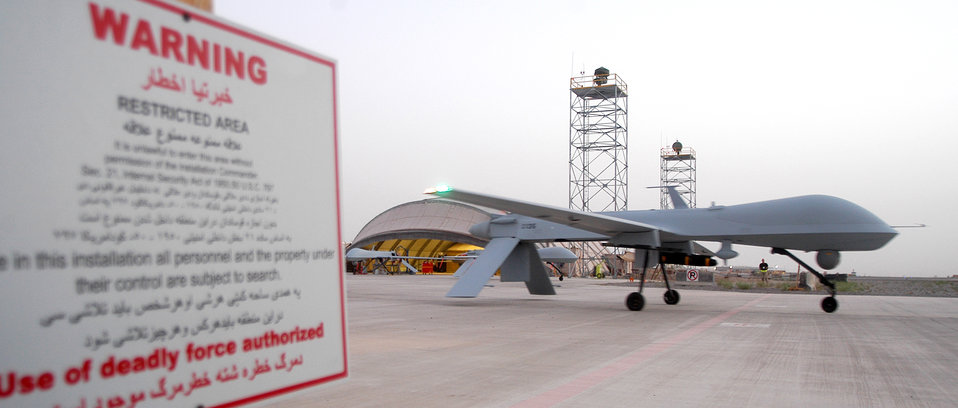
Predators provide eyes in the sky over Afghanistan

An MQ-1 Predator at Kandahar Airfield, Afghanistan, taxis out for a mission in support of Operation Enduring Freedom on Friday, June 2, 2006. The 62nd Expeditionary Reconnaissance Flight acts as the launch and recovery element for Predator sorties. Once airborne, they are flown by pilots and sensor operators from Nellis Air Force Base, Nev.